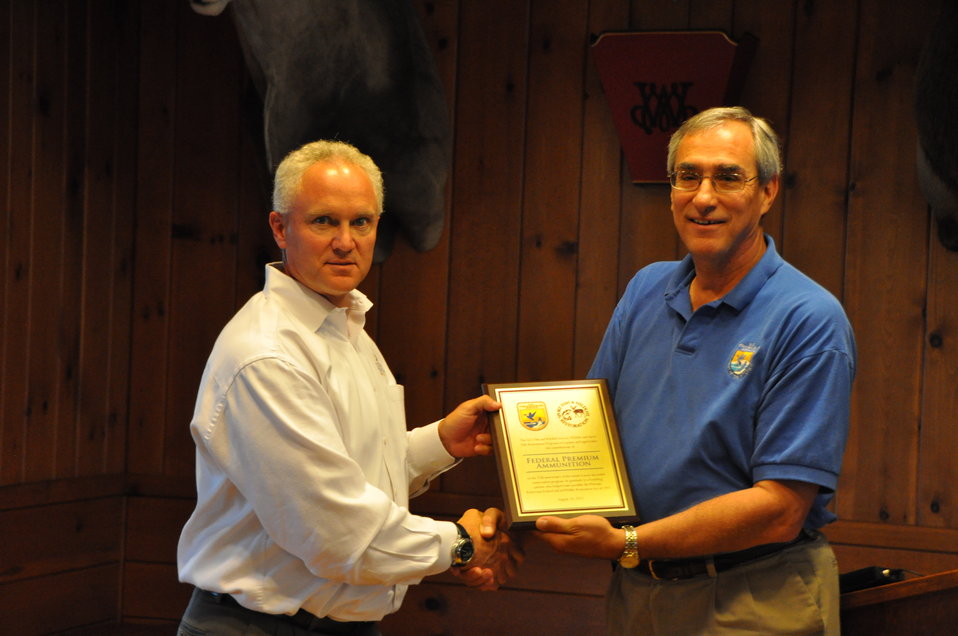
Regional Director Tom Melius presents President of Federal Premium Ammunition Ron Johnson with commemorative plaque honoring the company's 90th anniversary and its contributions to conservation.